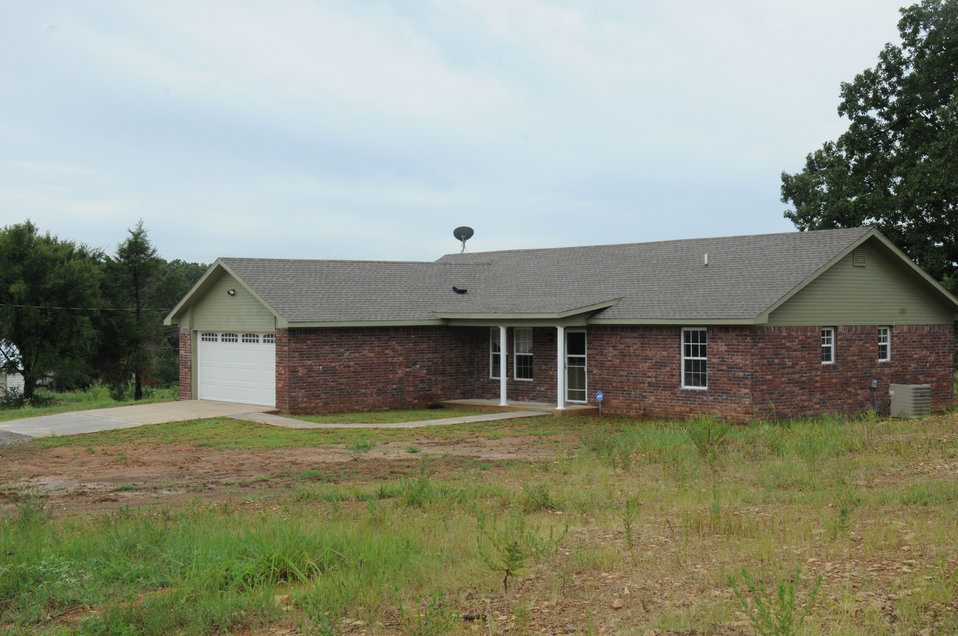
Bertha Anne Davis's new home in Fort Coffee, Oklahoma. Mrs. Davis is a single mother raising her son and her 2 nephews and a niece. She received a home loan from the U.S. Department of Agriculture Rural Development (RD) agency using funding from the American Recovery and Reinvestment Act (AARA) for a home loan of $98 thousand. She was living in a 2-bedroom ranch and now has a new 4-bedroom home in Fort Coffee, Oklahoma. She works for the Fort Coffee, OK school system and is attending night school to get her teaching degree.